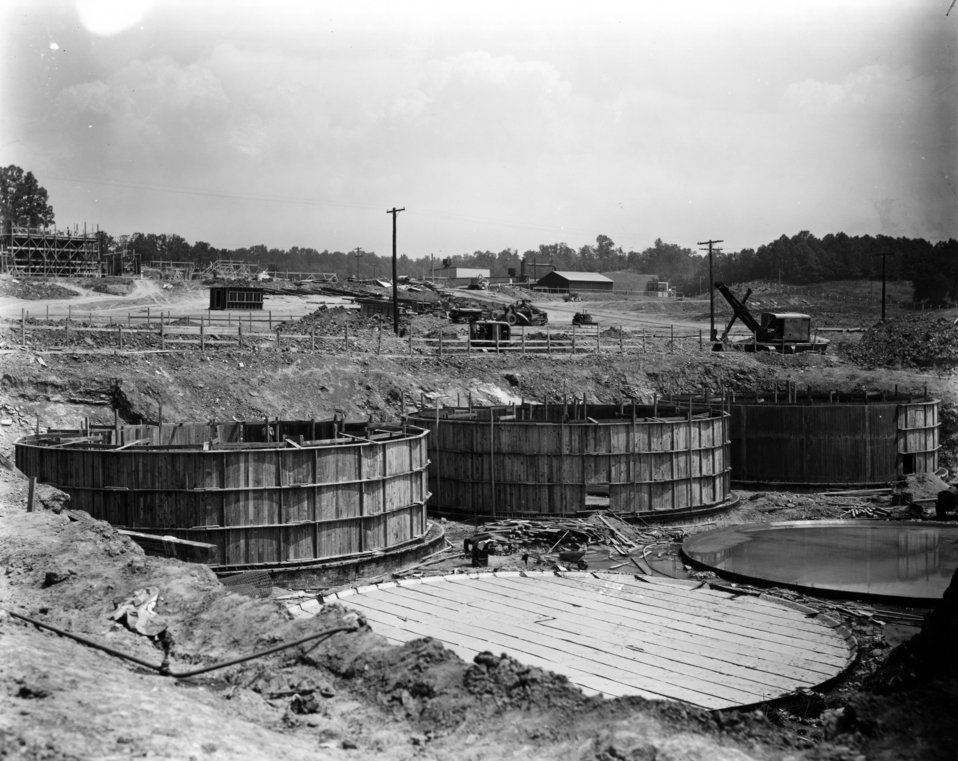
X-10 at Oak Ridge